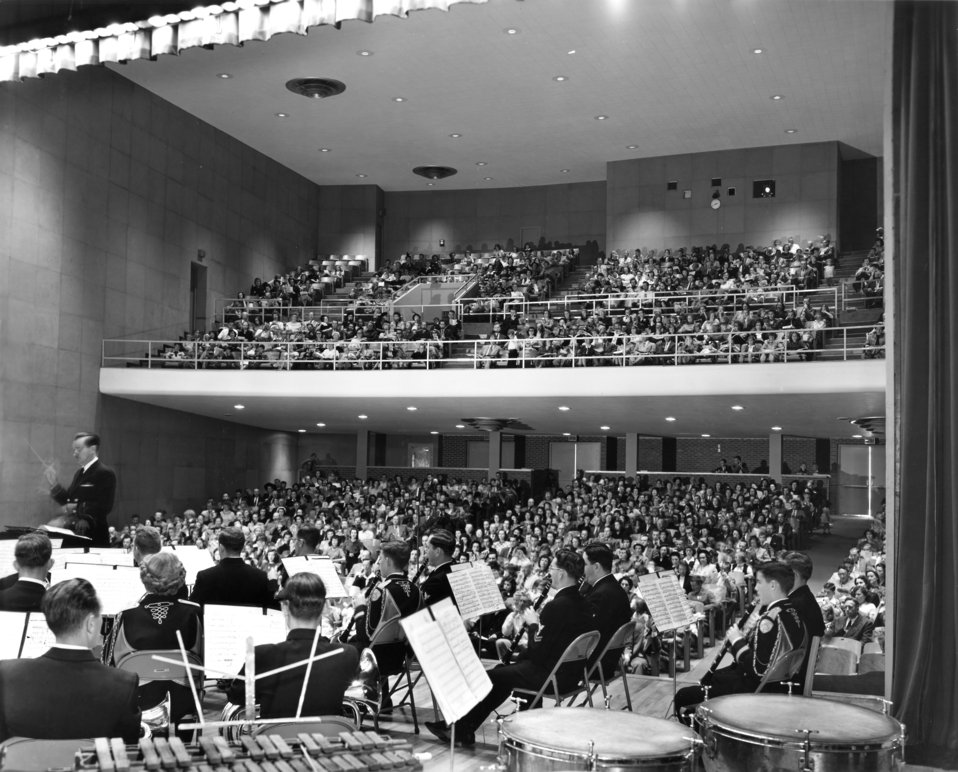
Concert Oak Ridge High School 1951

7290-1 DOE photo Ed Westcott 10-1-1951 Oak Ridge Tennessee